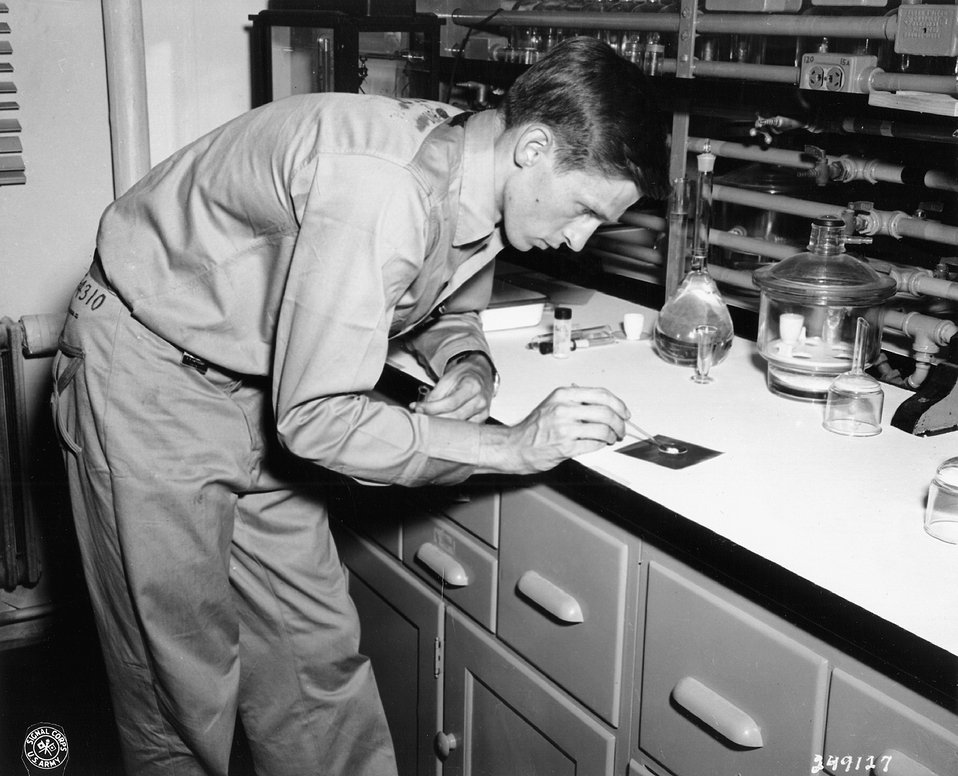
Dr. Edward Teller (right) congratulates Oppenheimer at the 1963 Fermi Award reception held in the Great Hall of the National Academy of the Sciences, December 2, 1963. c. 1963